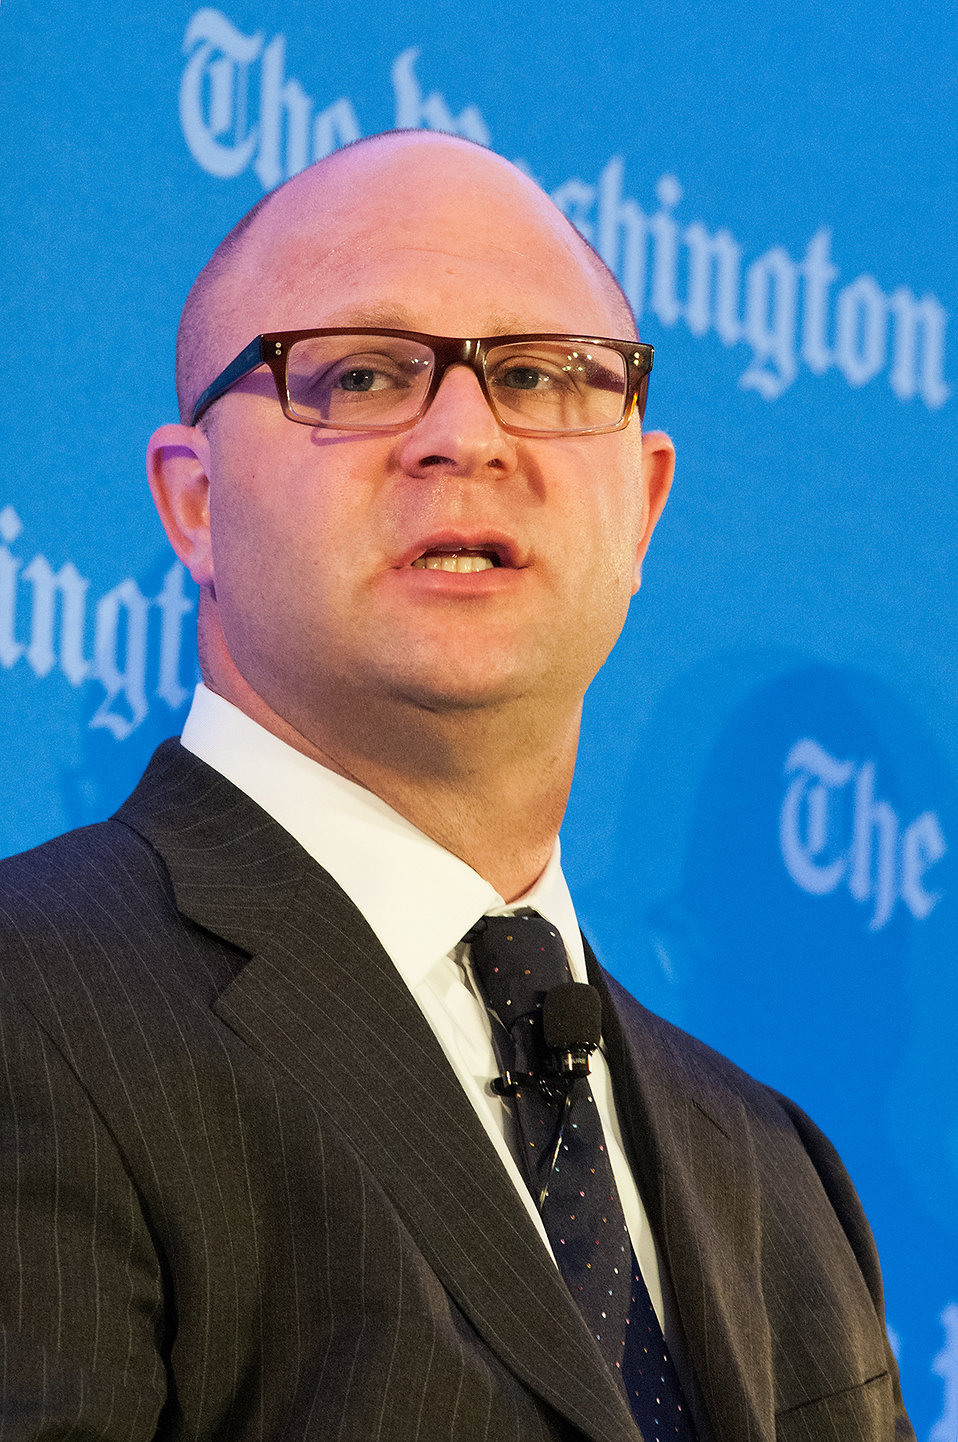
Grocery Manufacturers Association Government Affairs Executive Vice President Louis Finkel discusses Industry Speaks: What Retailers, Processors and Manufacturers are Doing, during the annual live forum, “Future of Food: Building a Sustainable Food System 2013,” sponsored by the Washington Post Live in Washington, D.C. on Wednesday, May 22, 2013. Agriculture Secretary Tom Vilsack, leading agricultural, government and nutrition experts discussed expanding healthy, sustainable food systems including public-private partnerships, the market’s role in nutrition and the future of agricultural innovation.